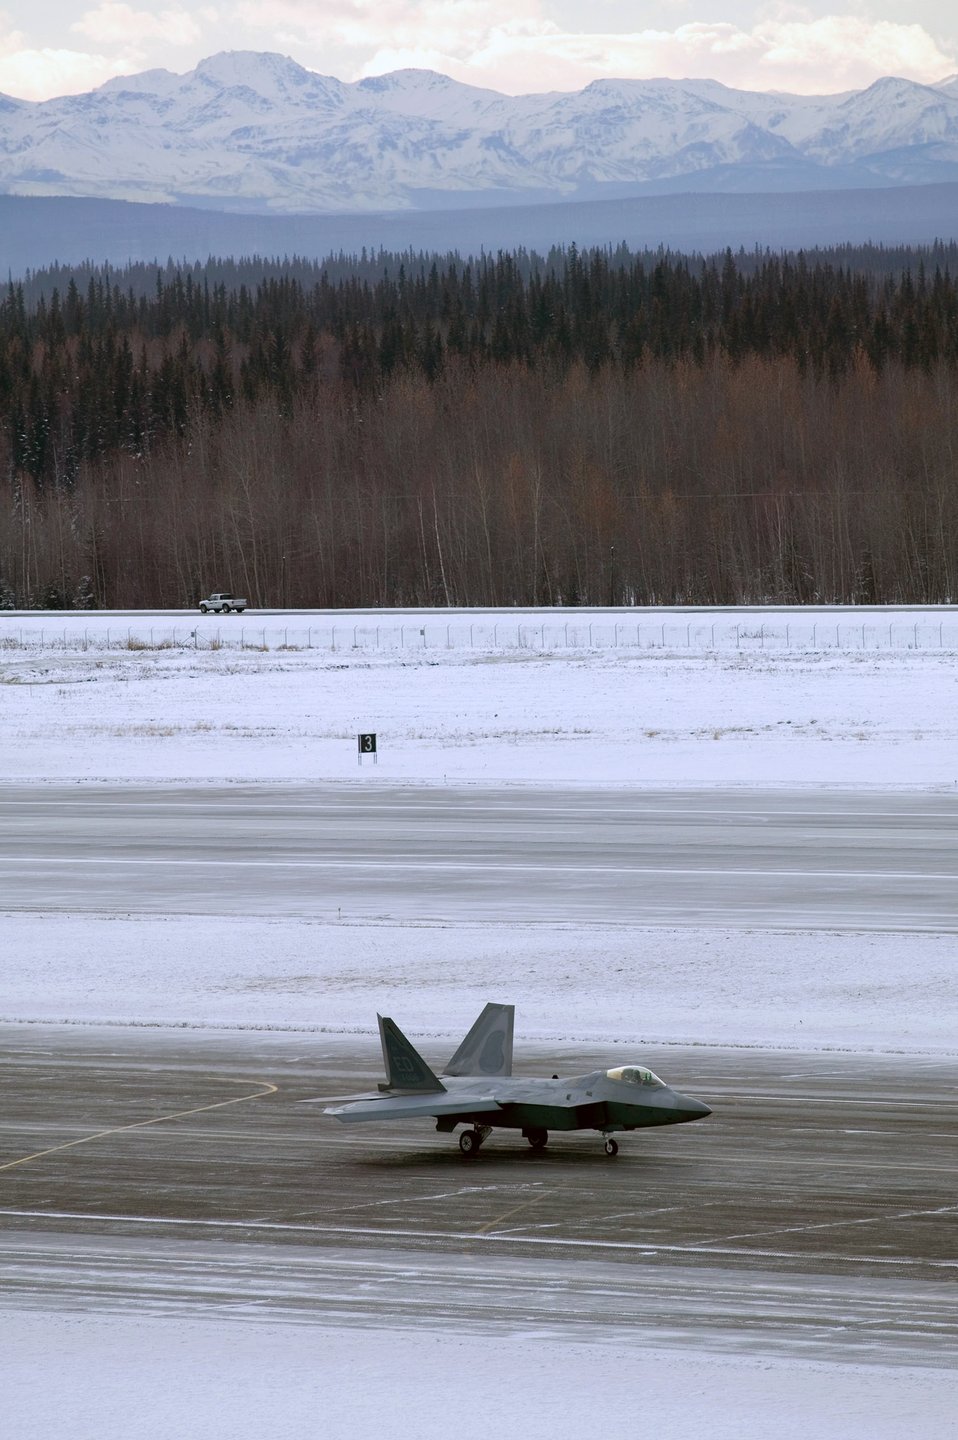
F-22 endures 3-week, cold-weather test at Eielson

An F-22 Raptor performs 60-knot testing on low runway conditions Nov. 8 at Eielson Air Force Base, Alaska. The F-22 underwent cold-weather testing on its braking system, with emphasis on its ability to maneuver, stop and go on slippery surfaces. The aircraft was tested by the 411th Flight Test Squadron during a three-week deployment on incrementally low-level runway condition reading surfaces, with temperatures ranging between 37 to -13 degrees. The F-22 is from Edwards AFB, Calif.